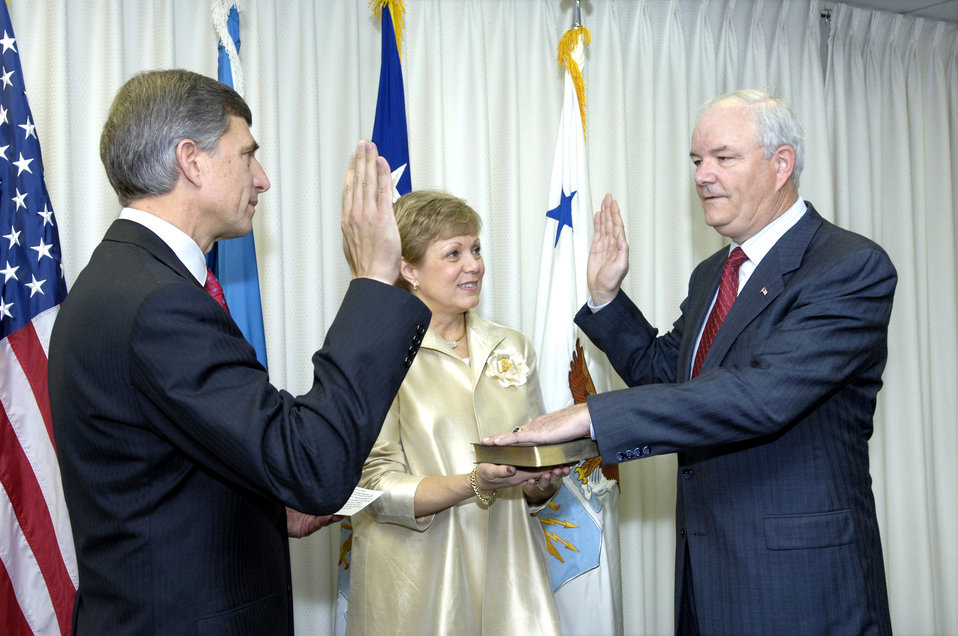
New SECAF

THE PENTAGON, Va. (AFPN) -- Under Secretary of the Air Force Ronald M. Sega (left) administers the oath of office to Michael W. Wynne as the 21st secretary of the Air Force Nov. 28. Joining her husband and holding the Bible is Barbara Wynne. Mr. Wynne was actually sworn-in during ceremonies at the U.S. Air Force Academy earlier this month, however, it was decided to hold another ceremony at the Pentagon to allow members of his family and his many Pentagon associates to share with him the joy of the appointment.